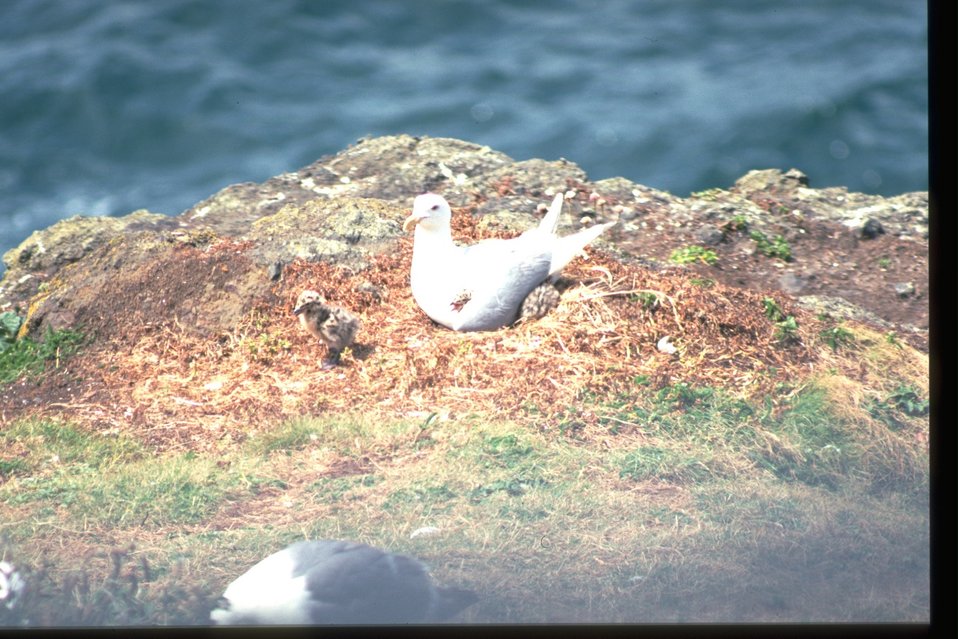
A gull with chick on rock near some body of water.